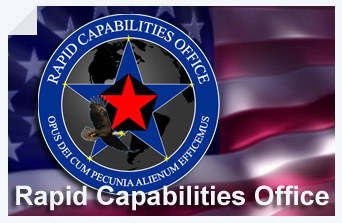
Rapid Capabilities Office

Fact sheet graphic for Rapid Capabilities Office.